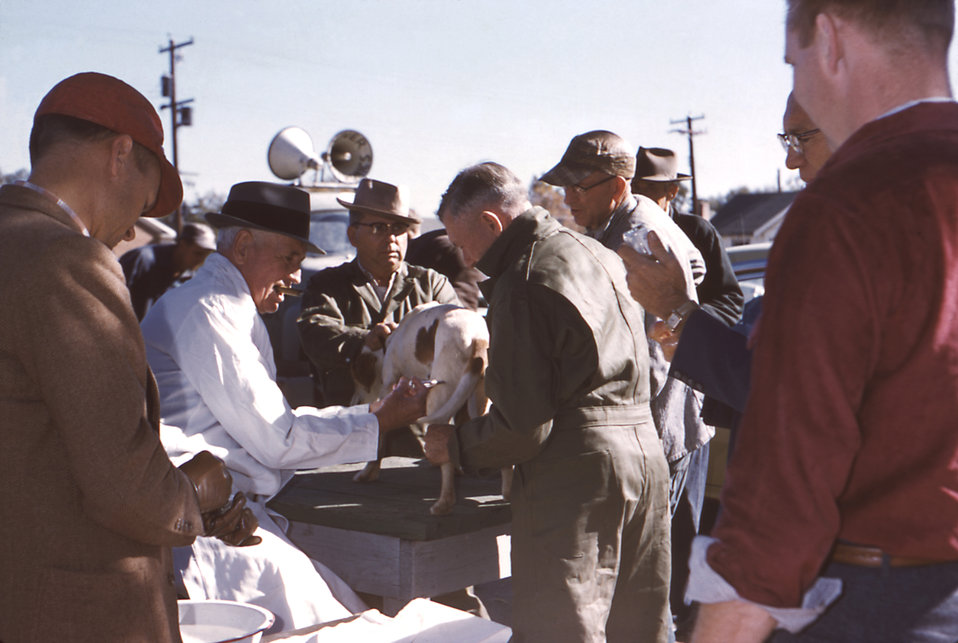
This 1958 photograph shows a veterinarian vaccinating a dog with the help of co-workers.